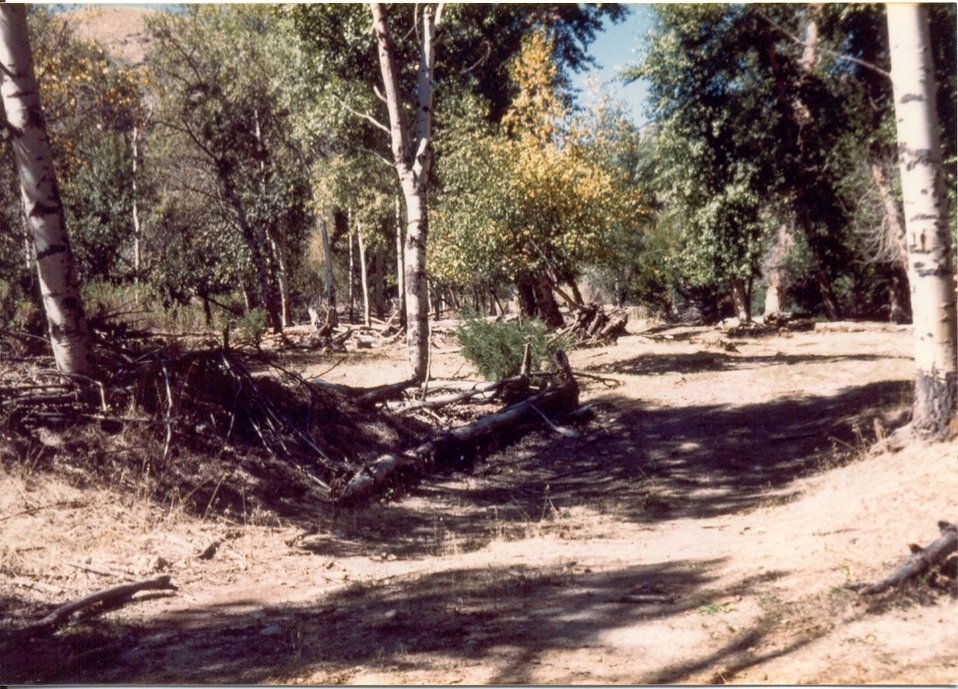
Roads Recreation Erosion Salmon Field Office UCSC Upper Columbia Salmon Clearwater District